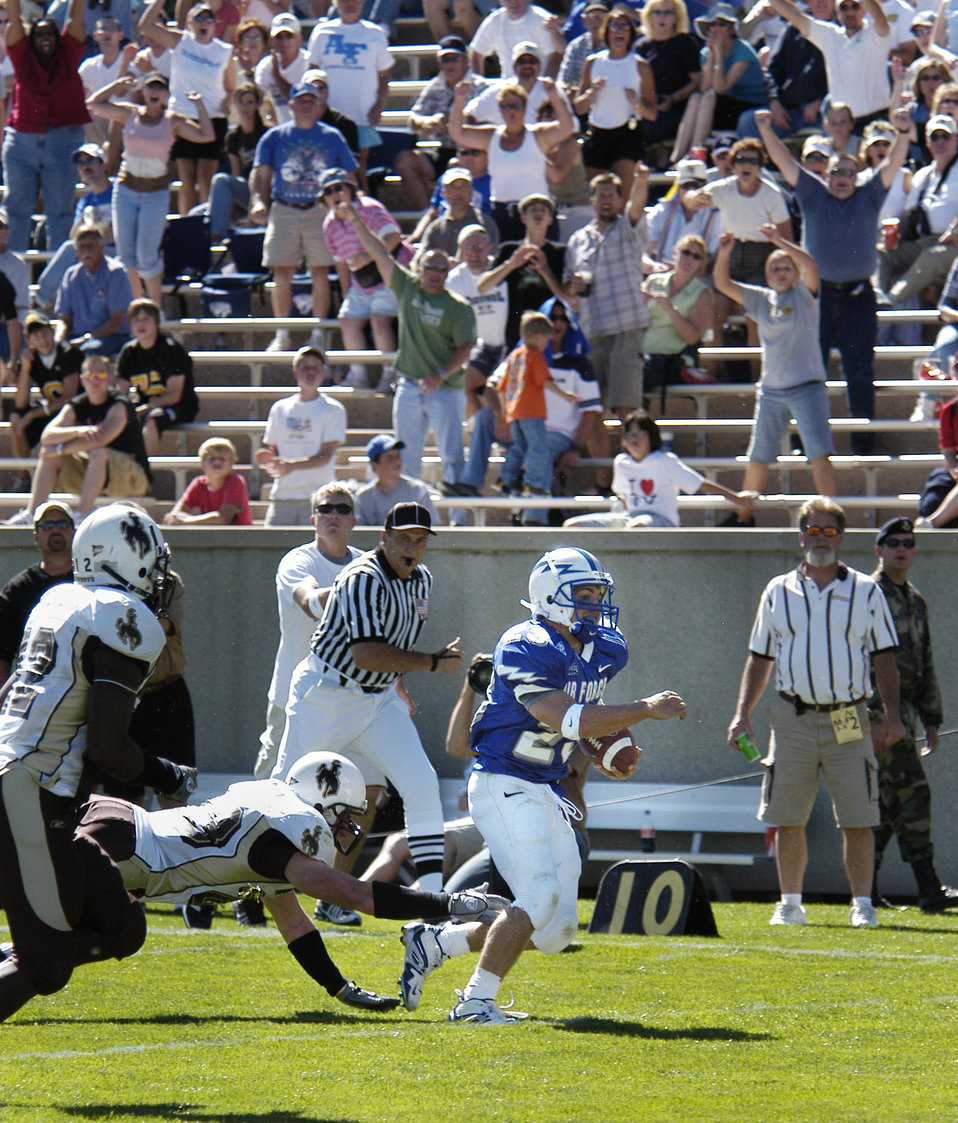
U.S. AIR FORCE ACADEMY, Colo. -- Air Force halfback Chad Hall, 23, eludes a University of Wyoming Cowboy defender on his way to the end zone and his first career Falcon touchdown here Sept. 17. The Cowboys went on to edge the Falcons 29-28.